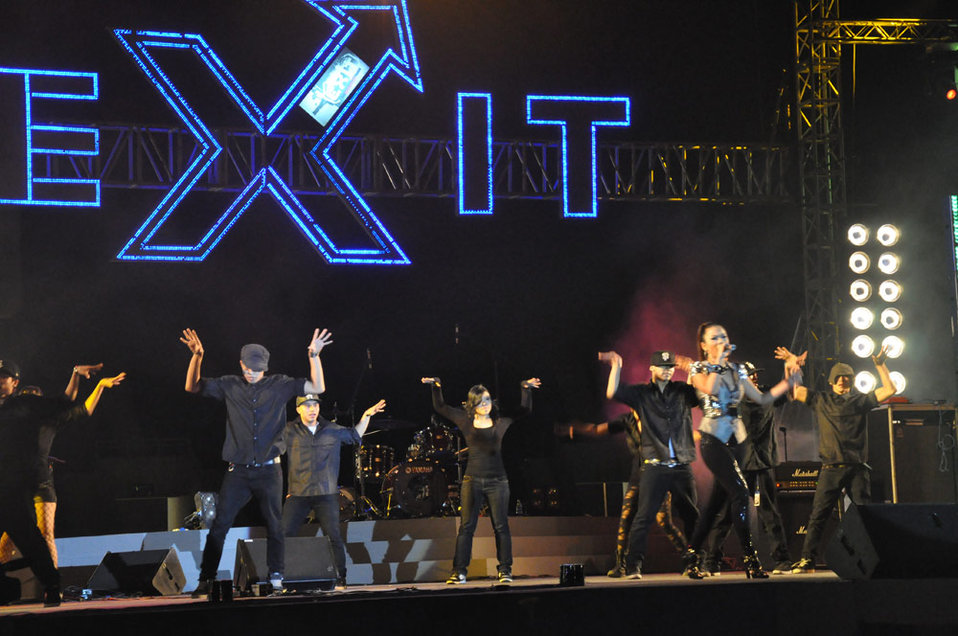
USAID Vietnam and MTVEXIT against Human Trafficking

Hanoi concert, March 27, 2010